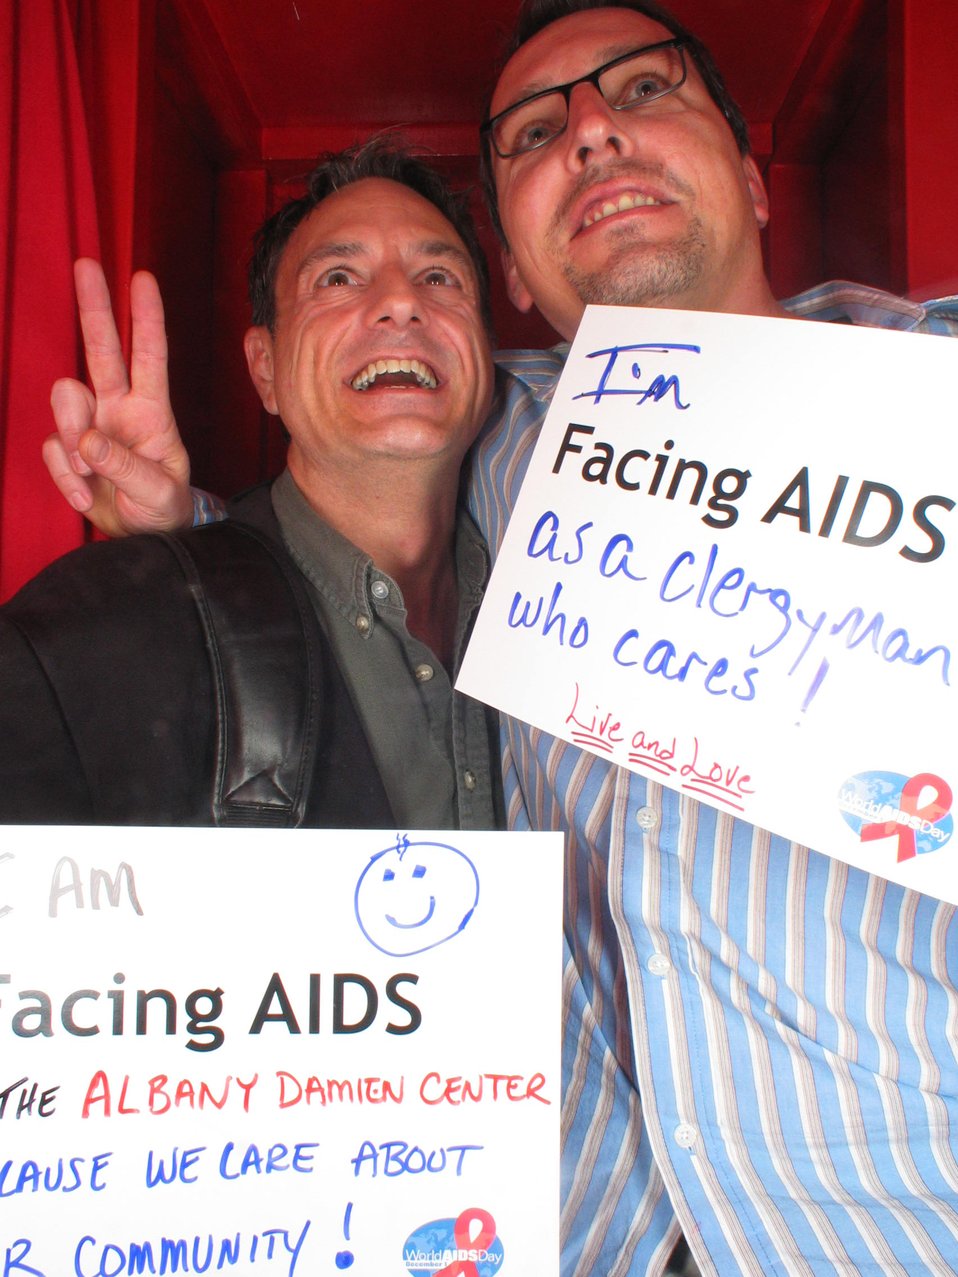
I'm Facing AIDS as a clergy man who cares.